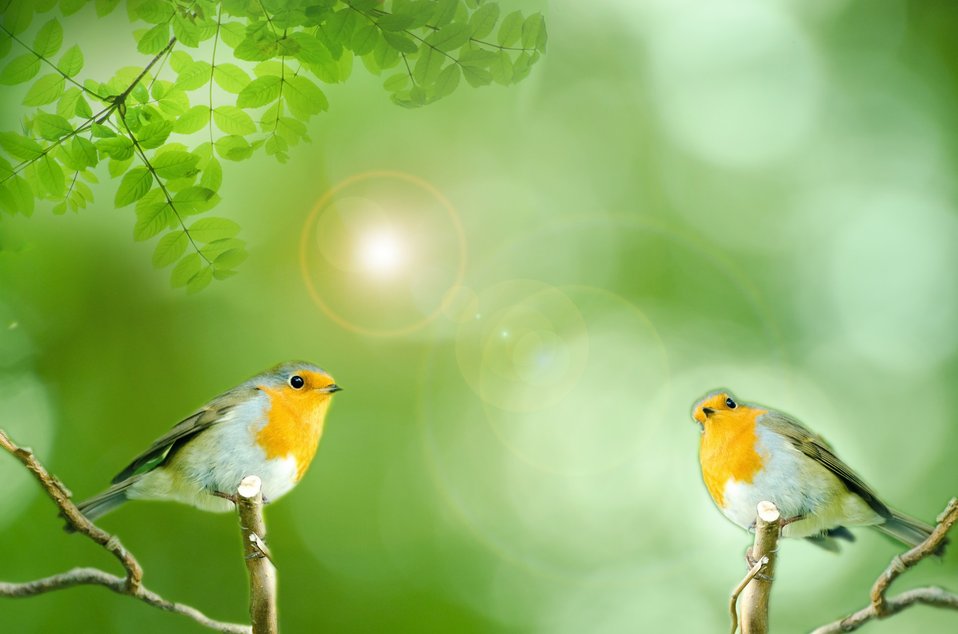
Birds - animals.